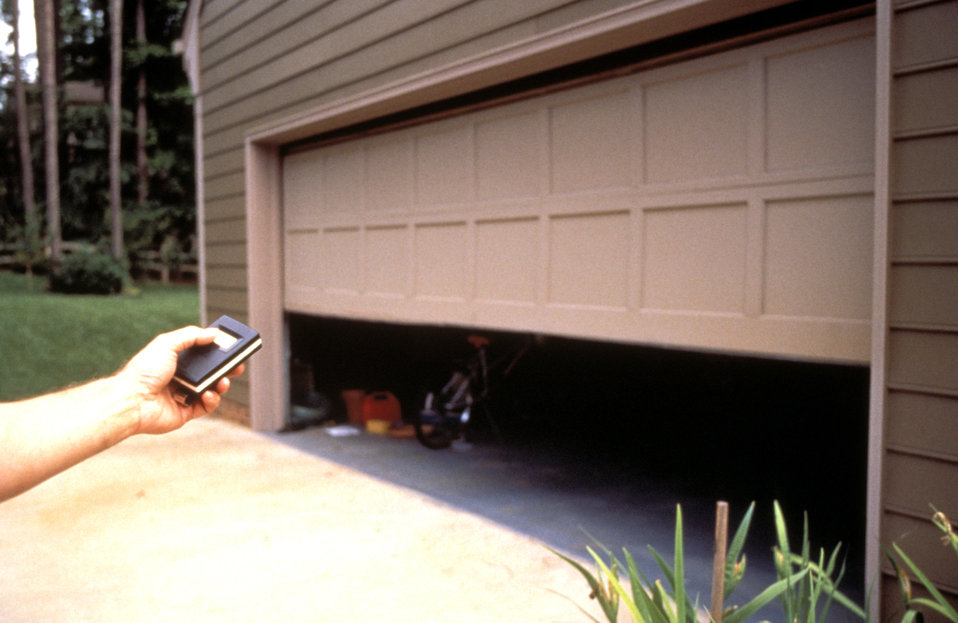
This 1994 image depicted a person opening and closing a remotely controlled electro-mechanical garage door. Such controllers were some of the original home automation devices offered to general end users, working well for those who don't want to have to open the door manually, but truly aided those who were physically unable to manually open their garage doors due to their impairments in mobility. They are truly universal devices, as virtually all present-day garages come equipped with these mechanisms